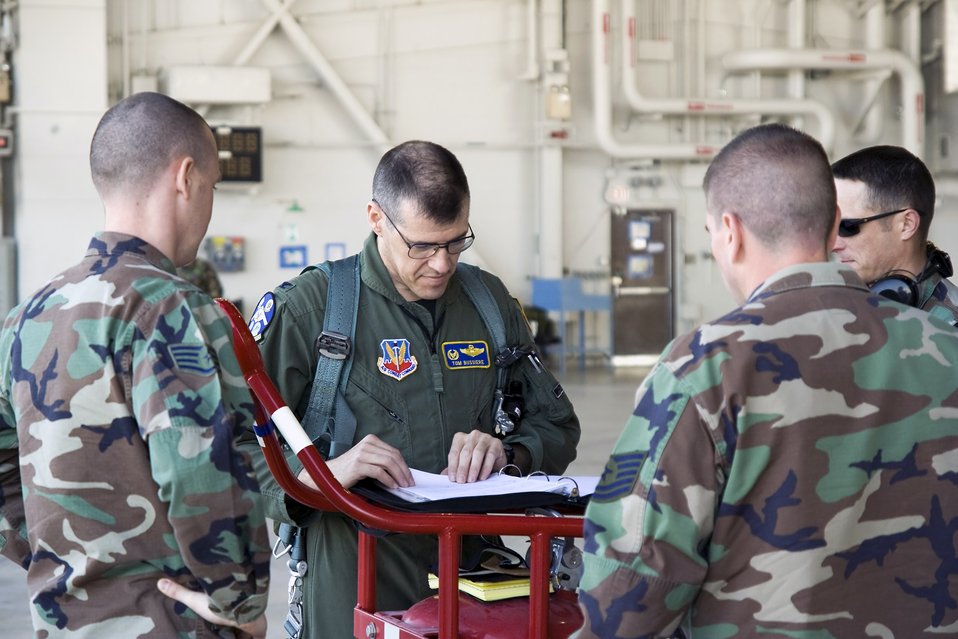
B-2s return to flight after safety pause

Col. Tom Bussiere reviews aircraft forms with maintainers prior to flying a B-2 Spirit named the Spirit of Florida April 15 at Whiteman Air Force Base, Mo. The flight was the first since a B-2 crashed Feb. 23 at Andersen AFB, Guam. Colonel Bussiere is the 509th Operations Group commander.